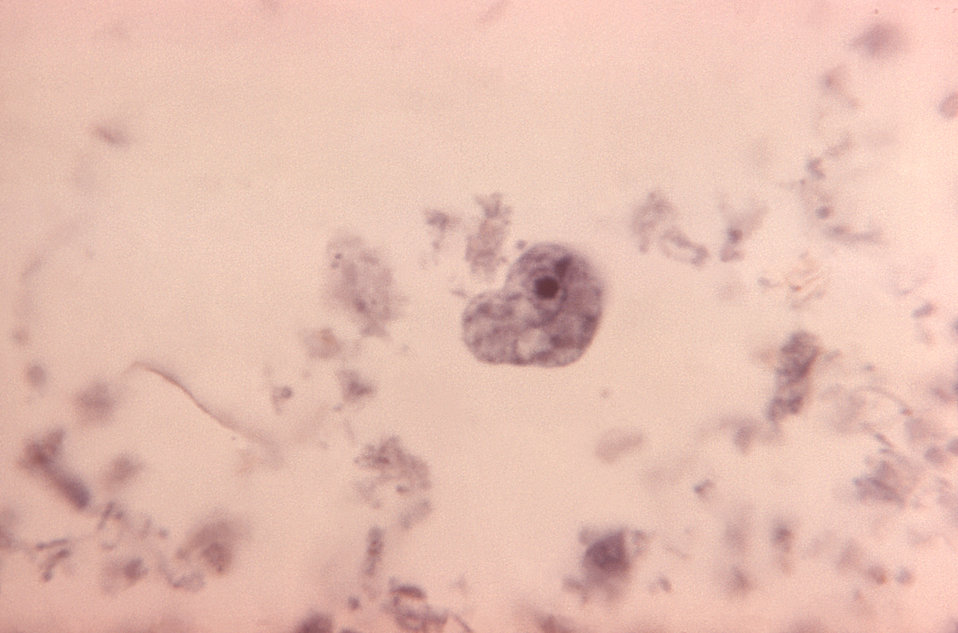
This photomicrograph depicts a single Iodamoeba buetschlii parasitic cyst within which the nucleus appeared to contain a single, large, centrally-located karyosome.